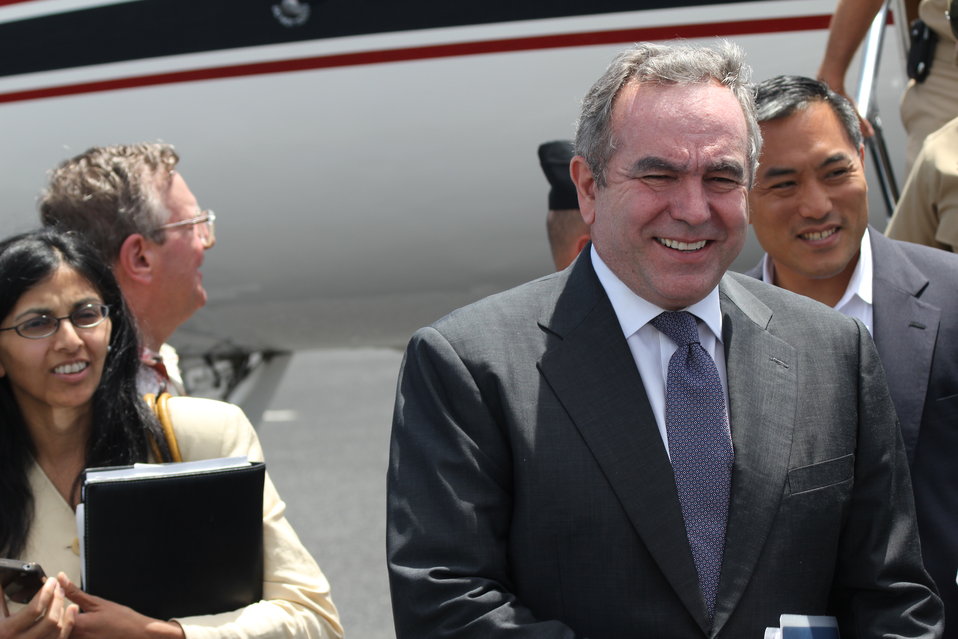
Assistant Secretary Campbell Arrives in Palikir, Pohnpei

Assistant Secretary of State for East Asian and Pacific Affairs Kurt Campbell arrives at Pohnpei International Airport in Palikir, Pohnpei, on July 1, 2011. Assistant Secretary Campbell is leading an inter-agency Pacific Island tour to engage in discussions to enhance bilateral political, economic and security relations in the region. The U.S. Delegation includes Pacific Fleet Commander Admiral Patrick Walsh, Office of the Secretary of Defense South/Southeast Asia Principal Director Brigadier General Richard Simcock, and U.S. Agency for International Development (USAID) Assistant Administrator for Asia Nisha Biswal, pictured left.